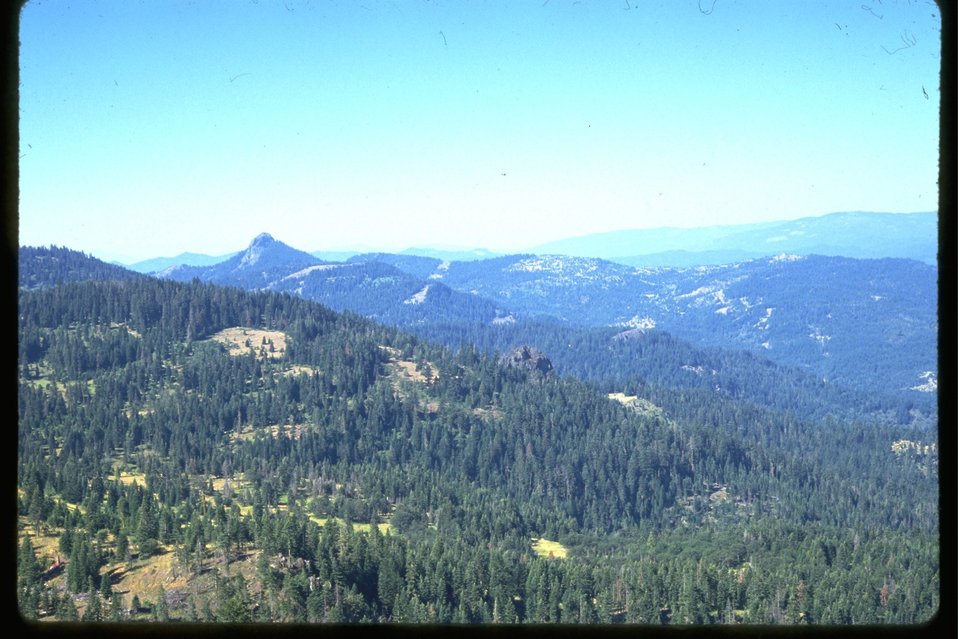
Pilot Rock and a bald spot on Soda Mountain.